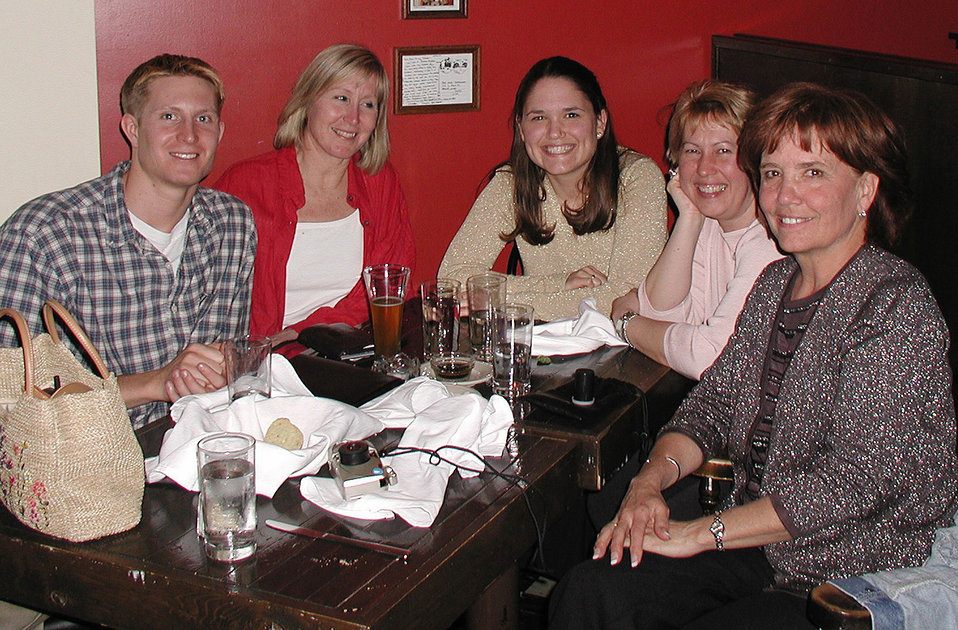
Captain honors friend through CFC

(Left to right) Capt. Reagan Beaton, his mother, Sarah Baxter, his wife, Sierra Beaton, his friend, Virginia Thomas, and his mother-in-law, Kathy Bachtel pose for a picture in March 2002. Virginia passed away two years later of cancer; Captain Beaton continues to honor Virginia by donating to cancer research through the Combined Federal Campaign.